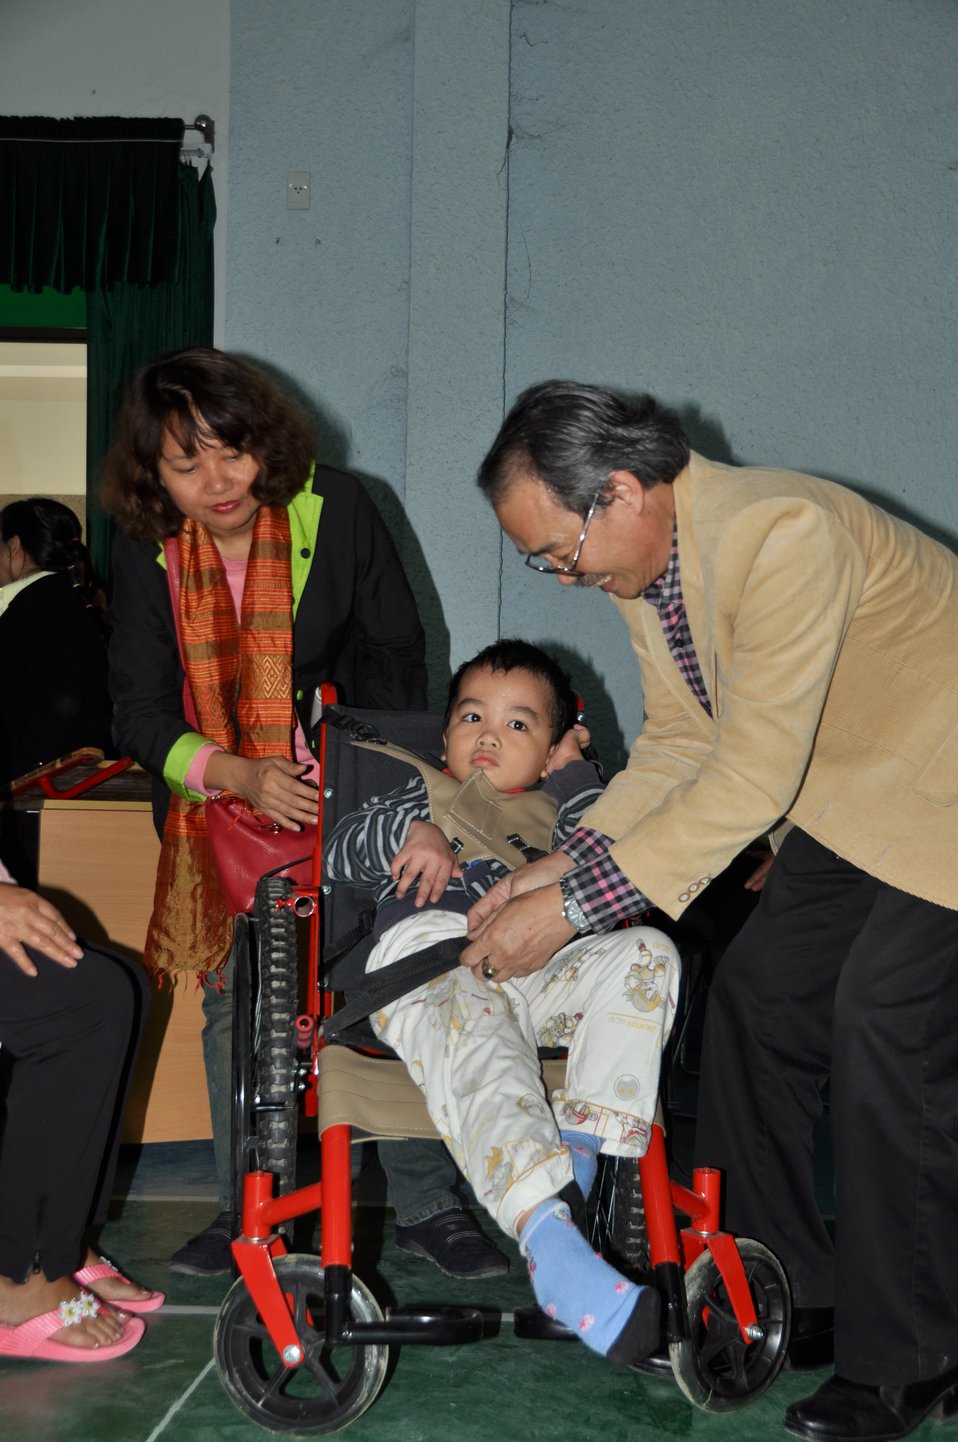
USAID supports delivery of wheelchairs to people with disabilities in Danang.

Danang, December 3, 2013.